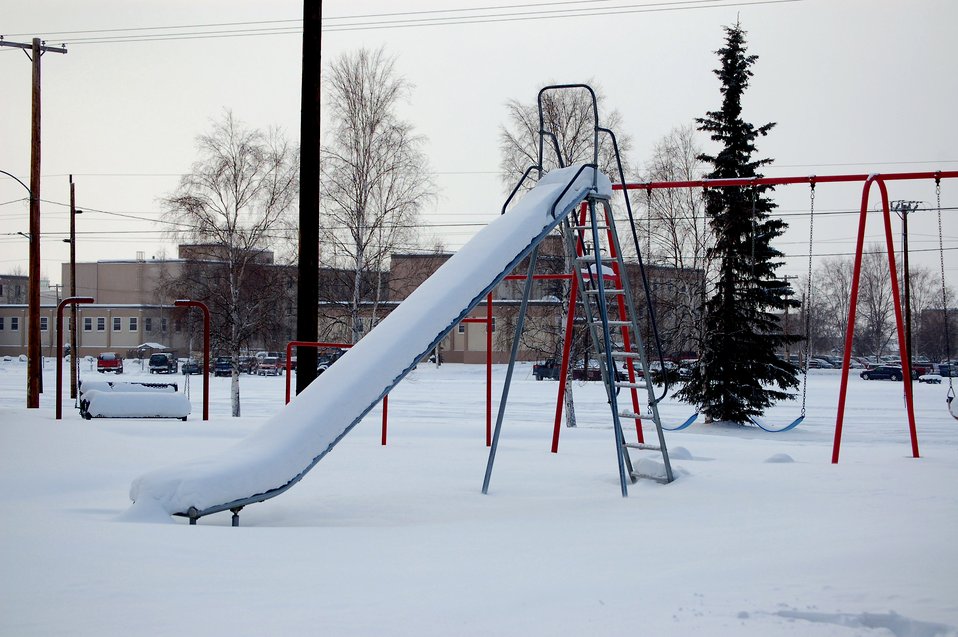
Eielson helps Airmen move into new homes in a hurry

An abandoned playground sits covered in snow in the Sprucewood Homes section of base housing Feb. 27 at Eielson Air Force Base, Alaska. Three hundred Air Force families had to be moved out of the privatized housing into new housing from September to December. The reason for the move was due to a conclusion of a privatized housing contract that wasn't able to be renegotiated.